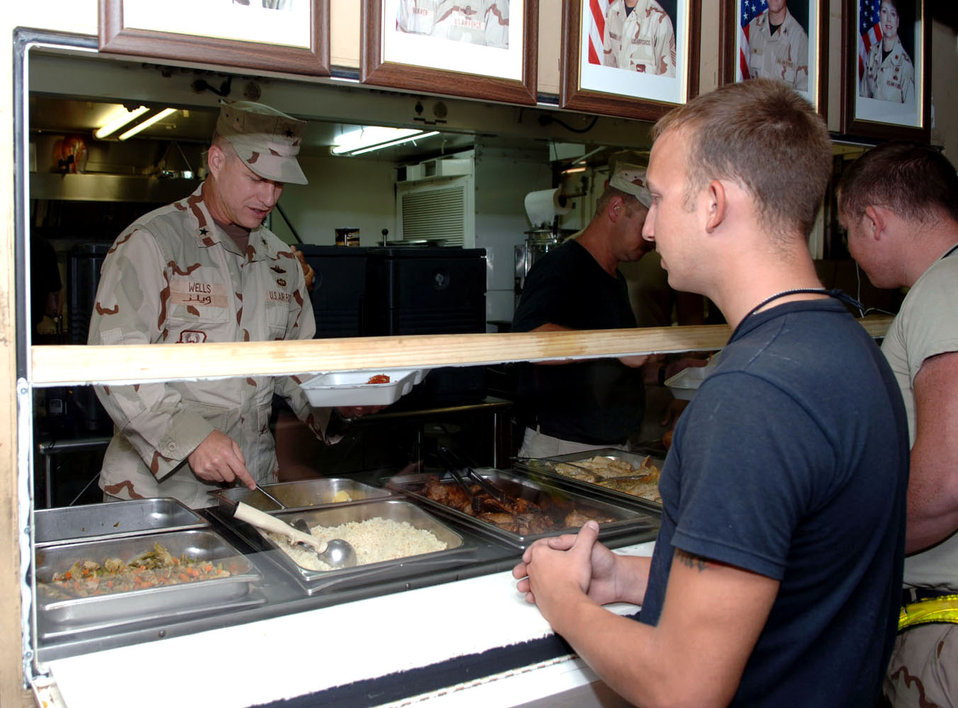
Deployed Airmen dish up a helping of gratitude

Brig. Gen. Lawrence Wells, the 380th Air Expeditionary Wing commander, dishes up a meal for a diner Aug. 7 at the containerized deployable kitchen. The general and members of his staff served food at the CDK all week to show their appreciation for the hard work and efforts put in on the operational side of base.